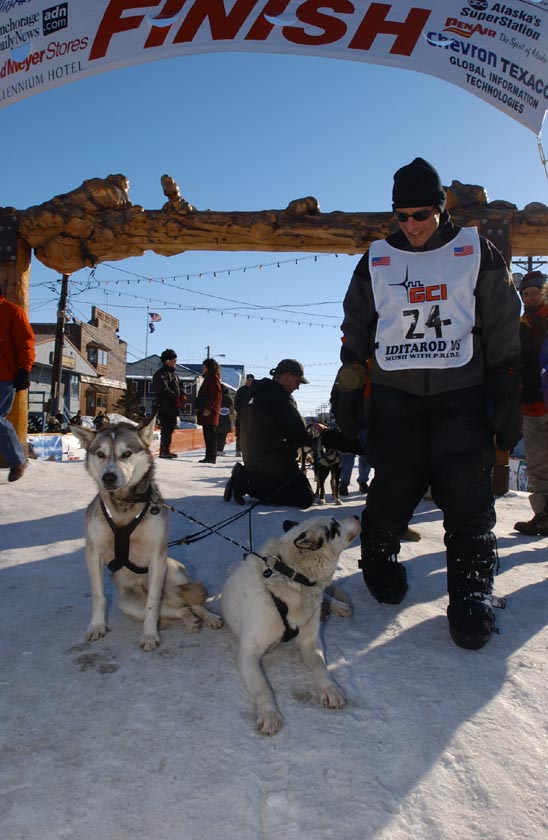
Elmendorf Airman finishes Iditarod

NOME, Alaksa -- Maj. (Dr.) Tom Knolmayer finishes the Iditarod Trail Sled Dog Race on March 20 after 13 days, 22 hours, 13 minutes and 25 seconds on the trail, covering 1,161 miles. He is chief of surgery at Elmendorf Air Force Base, Alaska.